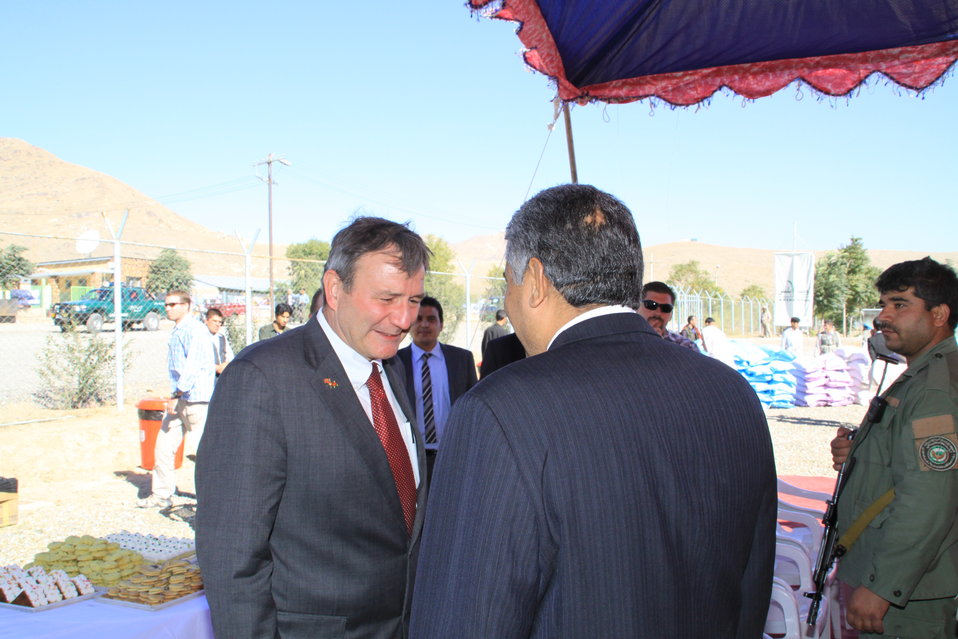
AVIPA Plus Wheat Seed Distribution 101005

US Ambassador Karl Eikenberry and USAID Acting Mission Director Kevin Brownawell joined the Minister of Agriculture, Irrigation and Livestock, H.E. Minister Mohammed Rahimi in signing a Memorandum of Understanding and distributing vouchers to area farmers for wheat and fertilizer.